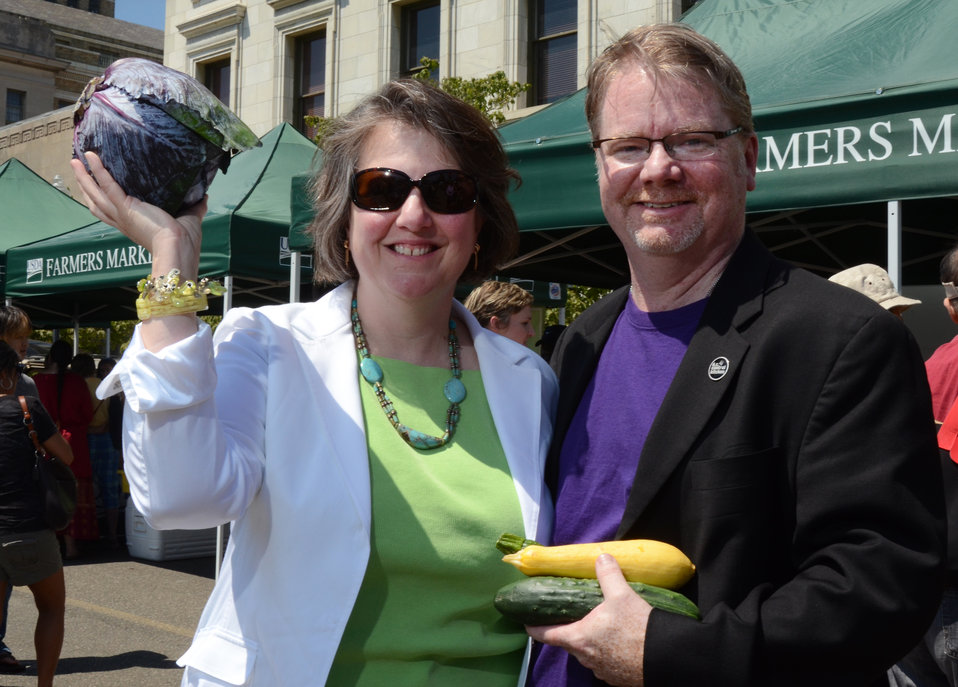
Agriculture Deputy Secretary Kathleen Merrigan and Mike Curtin, CEO of DC Central Kitchen at the USDA kickoff event for Feds Feed Families at the U.S. Department of Agriculture Farmers Market in Washington, D.C., on Friday, June 8, 2012.